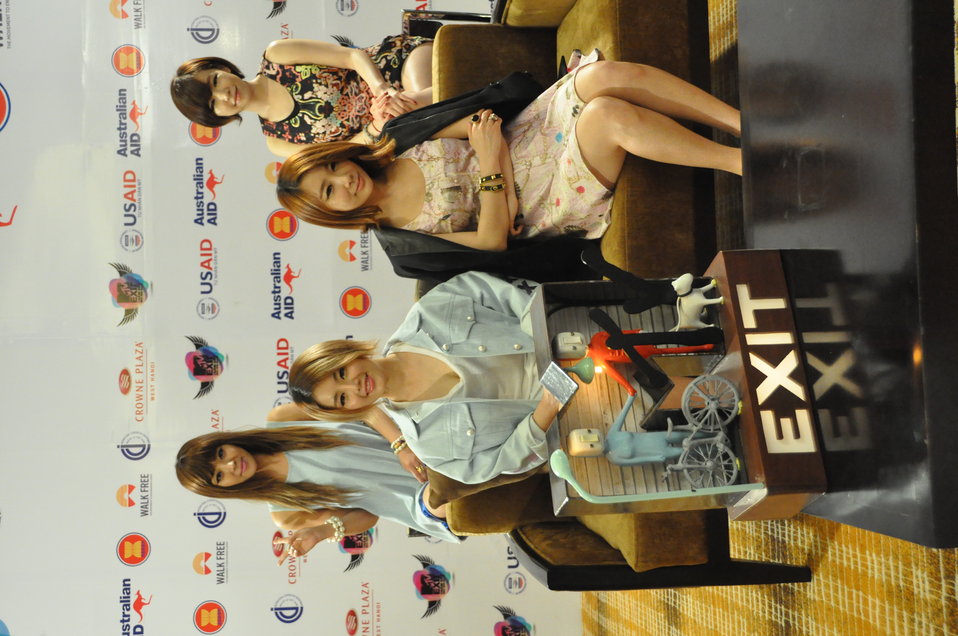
Brown Eyed Girls Meet the Press in Hanoi, May 27, 2012